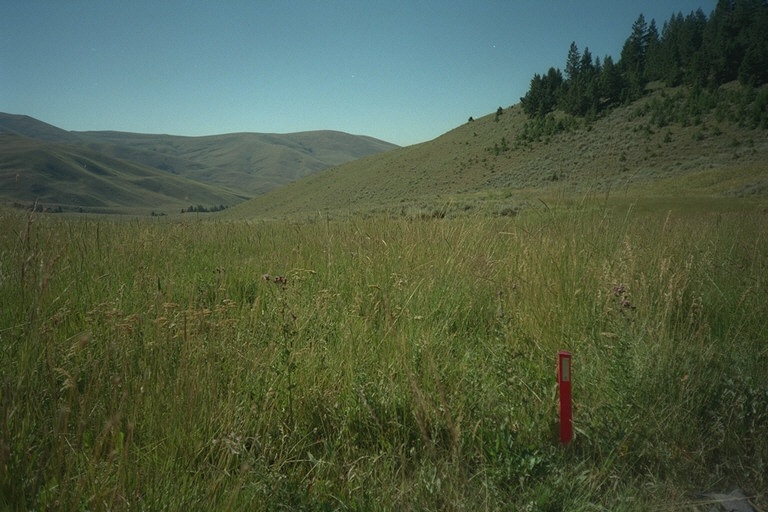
Riparian area Public Lands Salmon Field Office UCSC Upper Columbia Salmon Clearwater District